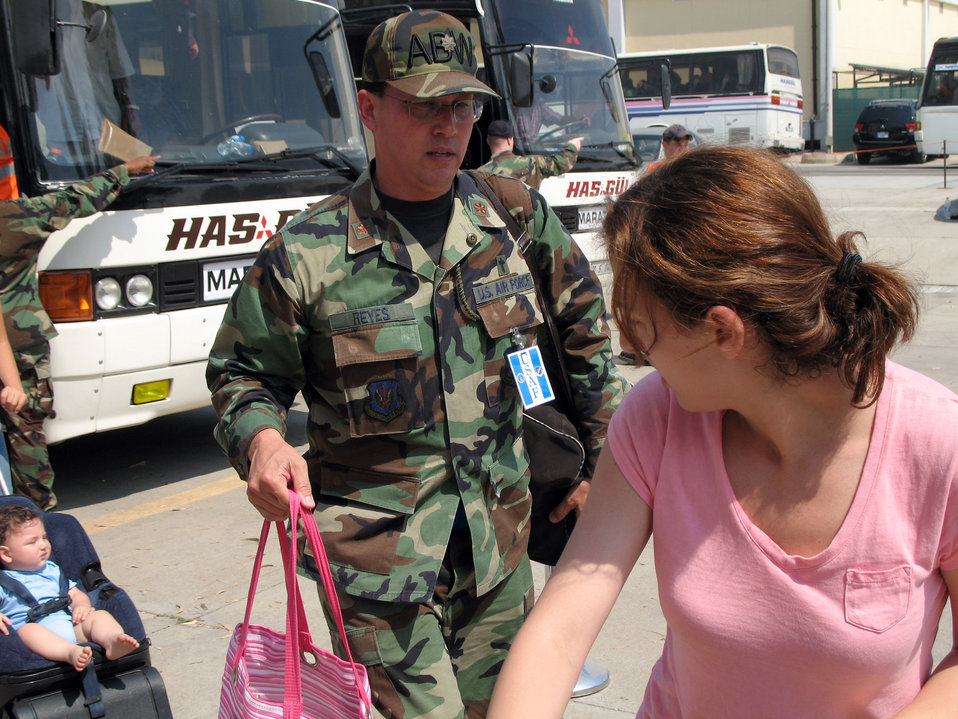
Americans arrive in Turkey from Lebanon

Chaplain (Maj.) Kenneth Reyes assists an American citizen arriving at Incirlik Air Base, Turkey, July 24 from Lebanon. More than 1,600 citizens arrived in the port city of Mersin, Turkey, on the USS Trenton before being transported by bus to Incirlik. Chaplain Reyes is the 39th Air Base Wing head chaplain.